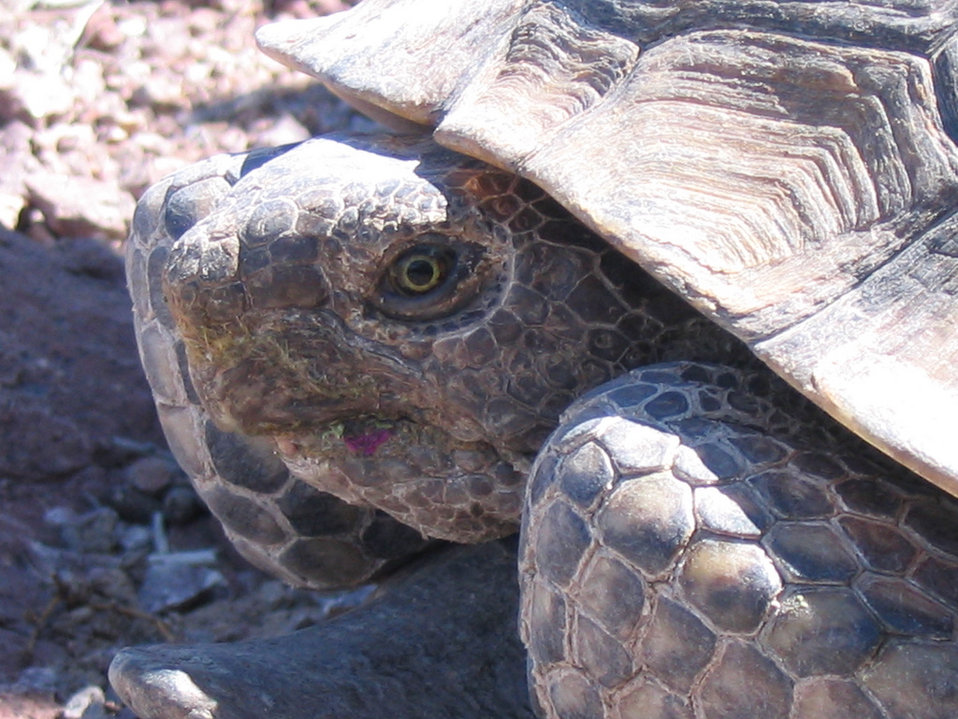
desert tortoise

threatened
Found on Imperial, Havasu and Cibola National Wildlife Refuges in CA and AZ